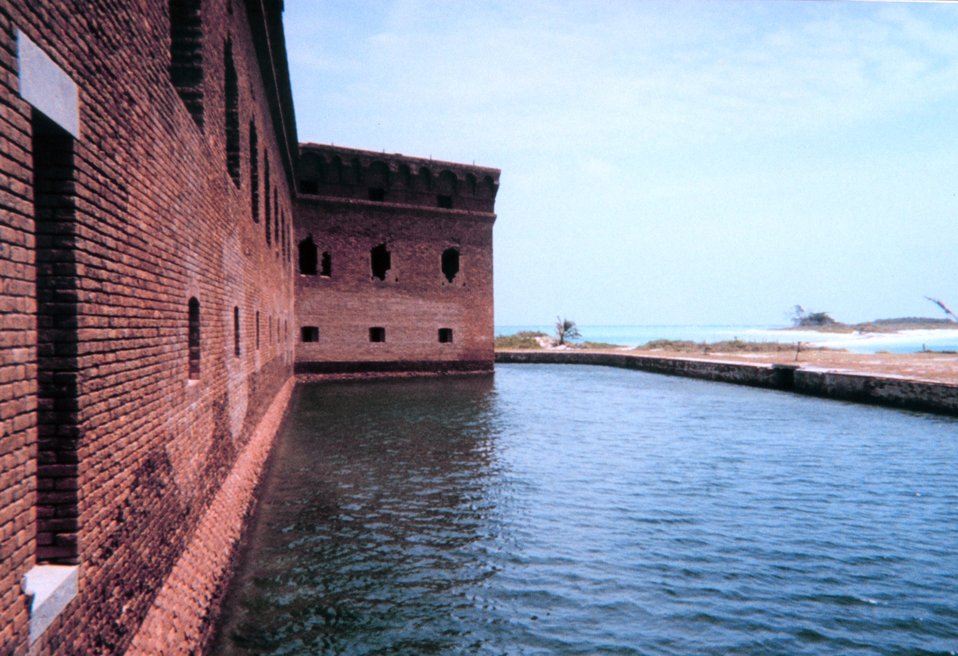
Looking at the outside walls and moat around Fort Jefferson.